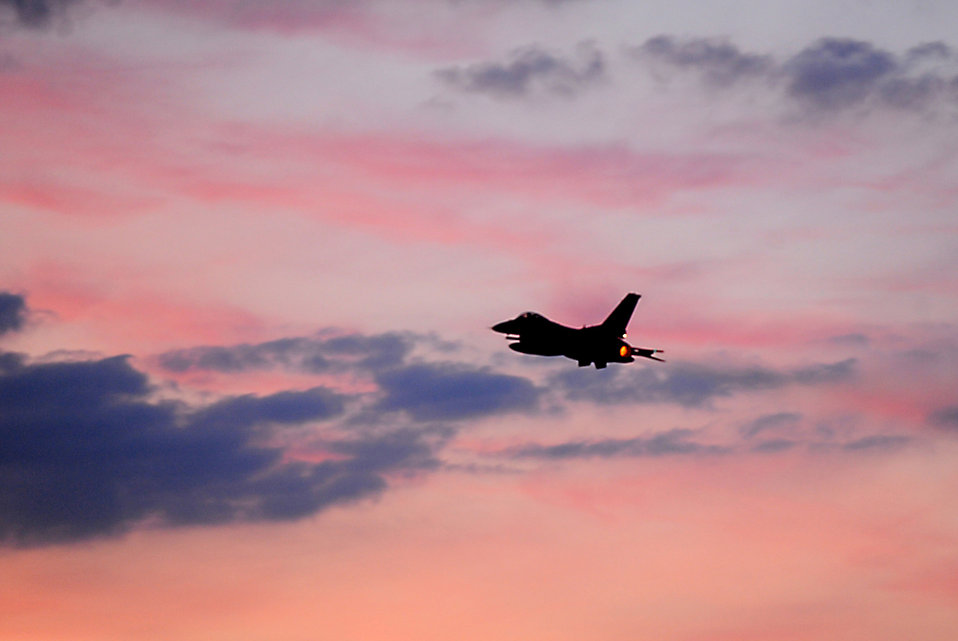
Soaring Falcon

An F-16 Fighting Falcon flies May 2, 2011, above Spangdahlem Air Base, Germany.